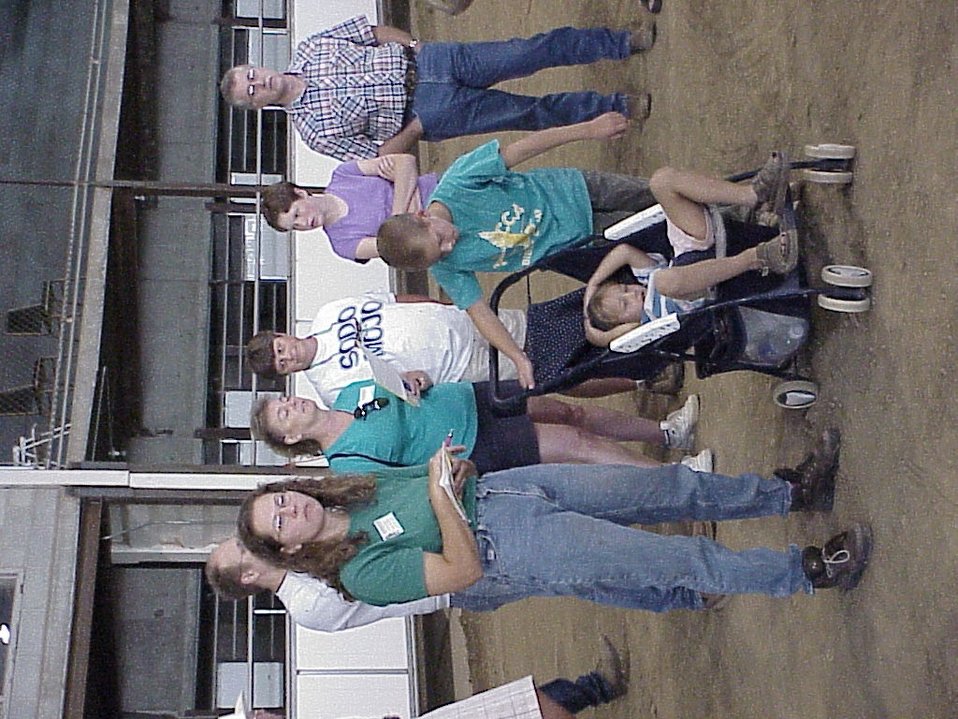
Lewiston Wild Horse and Burro Adoption Program Auction WHB indoor auction Cottonwood Field Office UCSC Upper Columbia Salmon Clearwater District